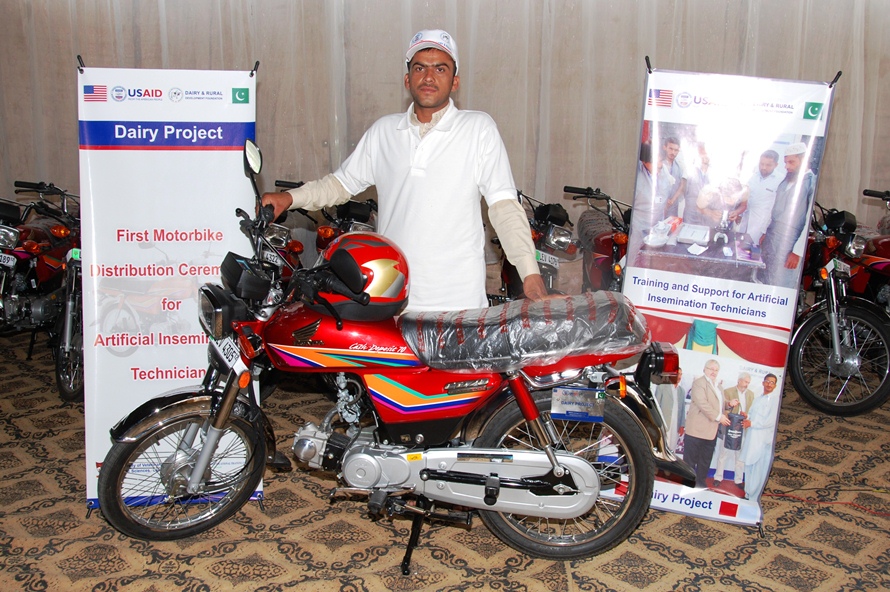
A successfull AI technician with his new motorcycle awarded by USAID Dairy Project 1